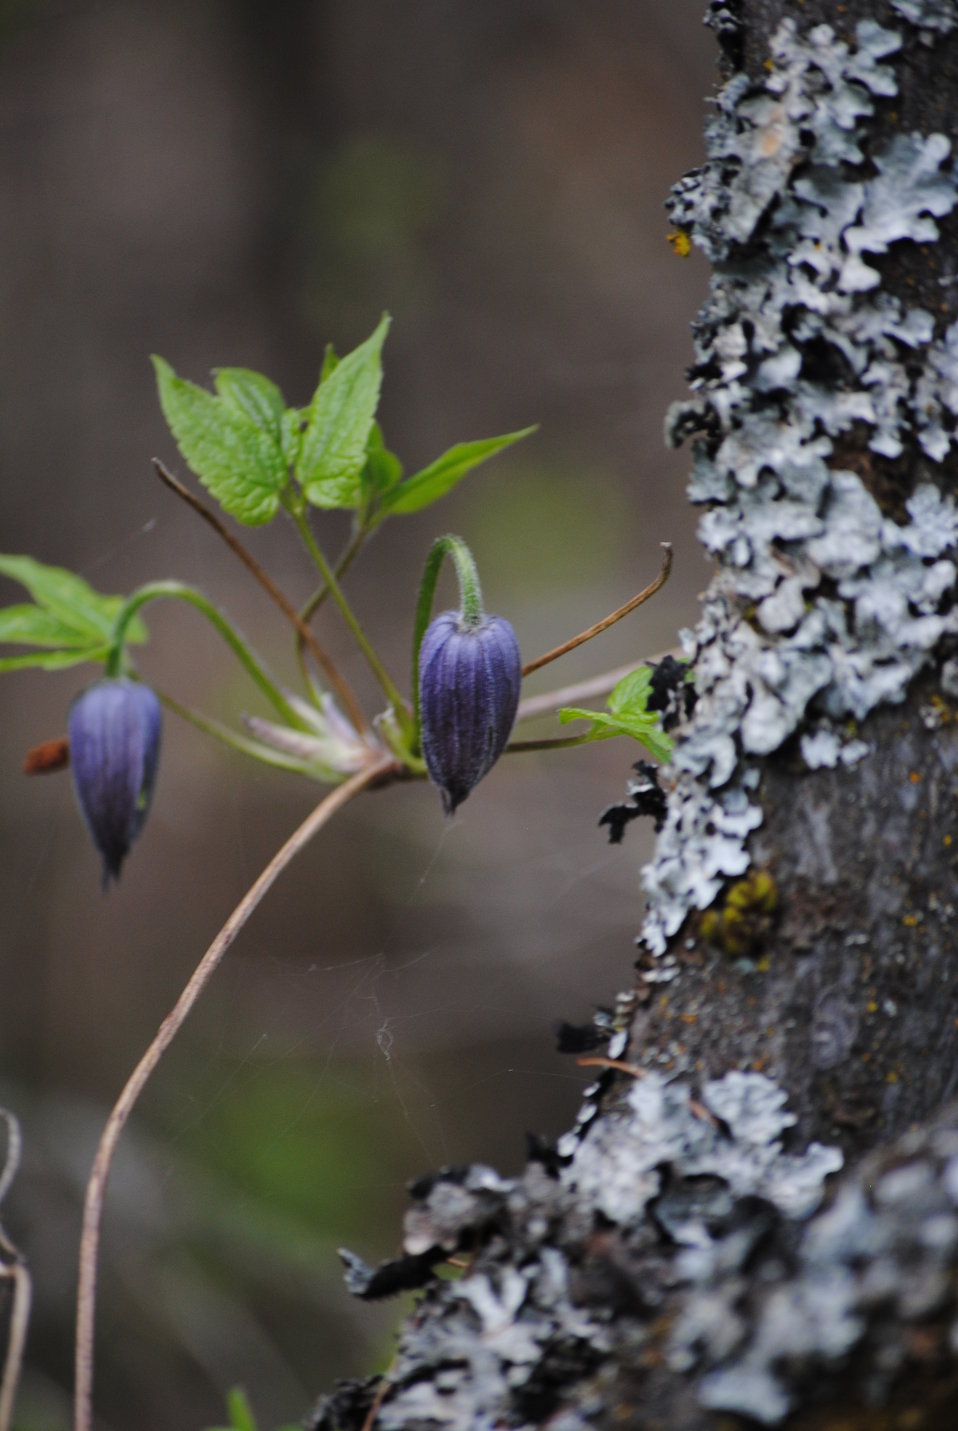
Creston's Nature Explore Outdoor Classroom

The Outdoor Classroom at Creston National Fish Hatchery features many wildflowers such as this Columbia Virgin's Bower vine (clematis), of the buttercup family.